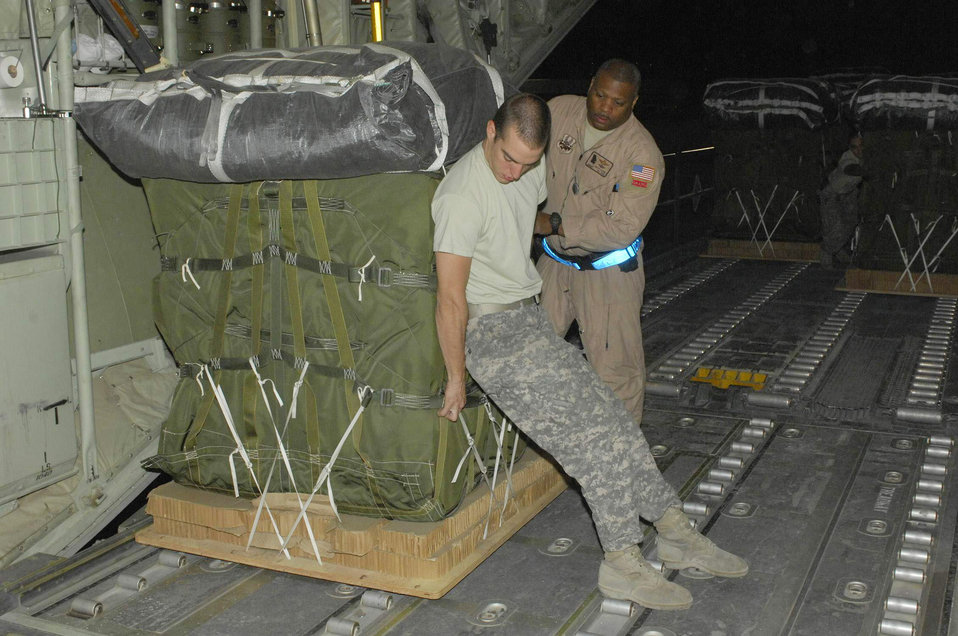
Airpower delivers 'critical' ammunition to Afghanistan National Army soldiers on the ground

Army Specialist Joshua Vazquez helps Senior Master Sgt. Timothy Gaines move a pallet onto a C-130 Hercules cargo bay. The duo were loading the Hercules for an airdrop mission. Specialist Vazquez is deployed from Fort Bragg, N.C., and hails from El Centro, Calif. Sergeant Gaines' is with the 165th Airlift Wing, a Georgia Air National Guard unit deployed from Savannah, Ga., which is also his homeown. Specialist Vazquez is with the 612th Port Master Detachment in Southwest Asia.